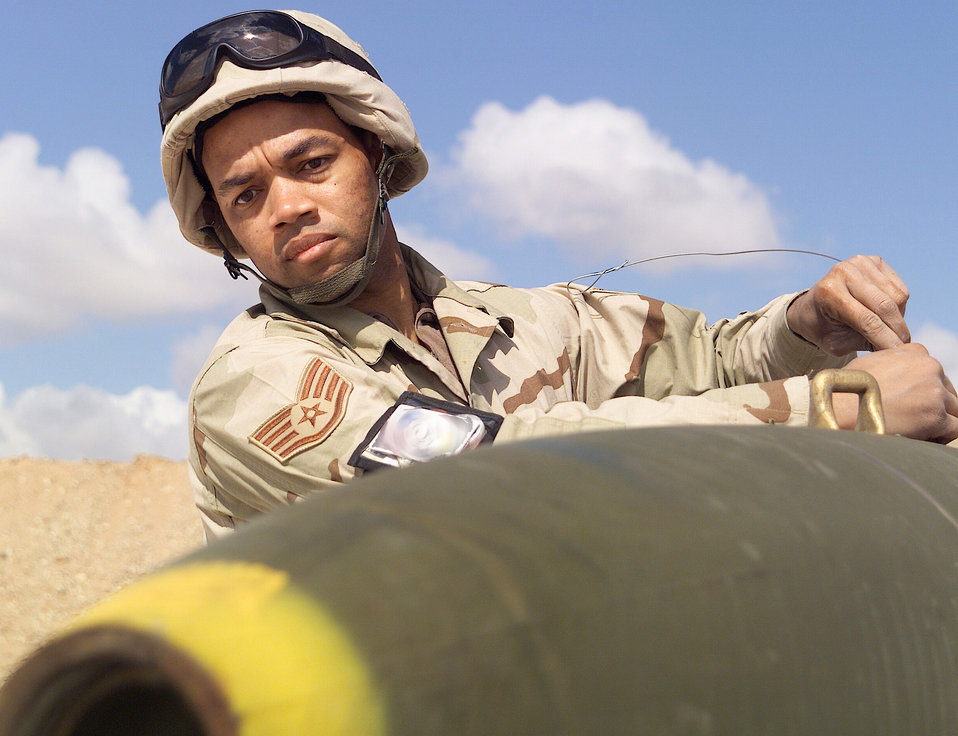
A Day 1

OPERATION IRAQI FREEDOM -- A 410th Air Expeditionary Wing maintenance troop guides a fuse through an air burst bomb in